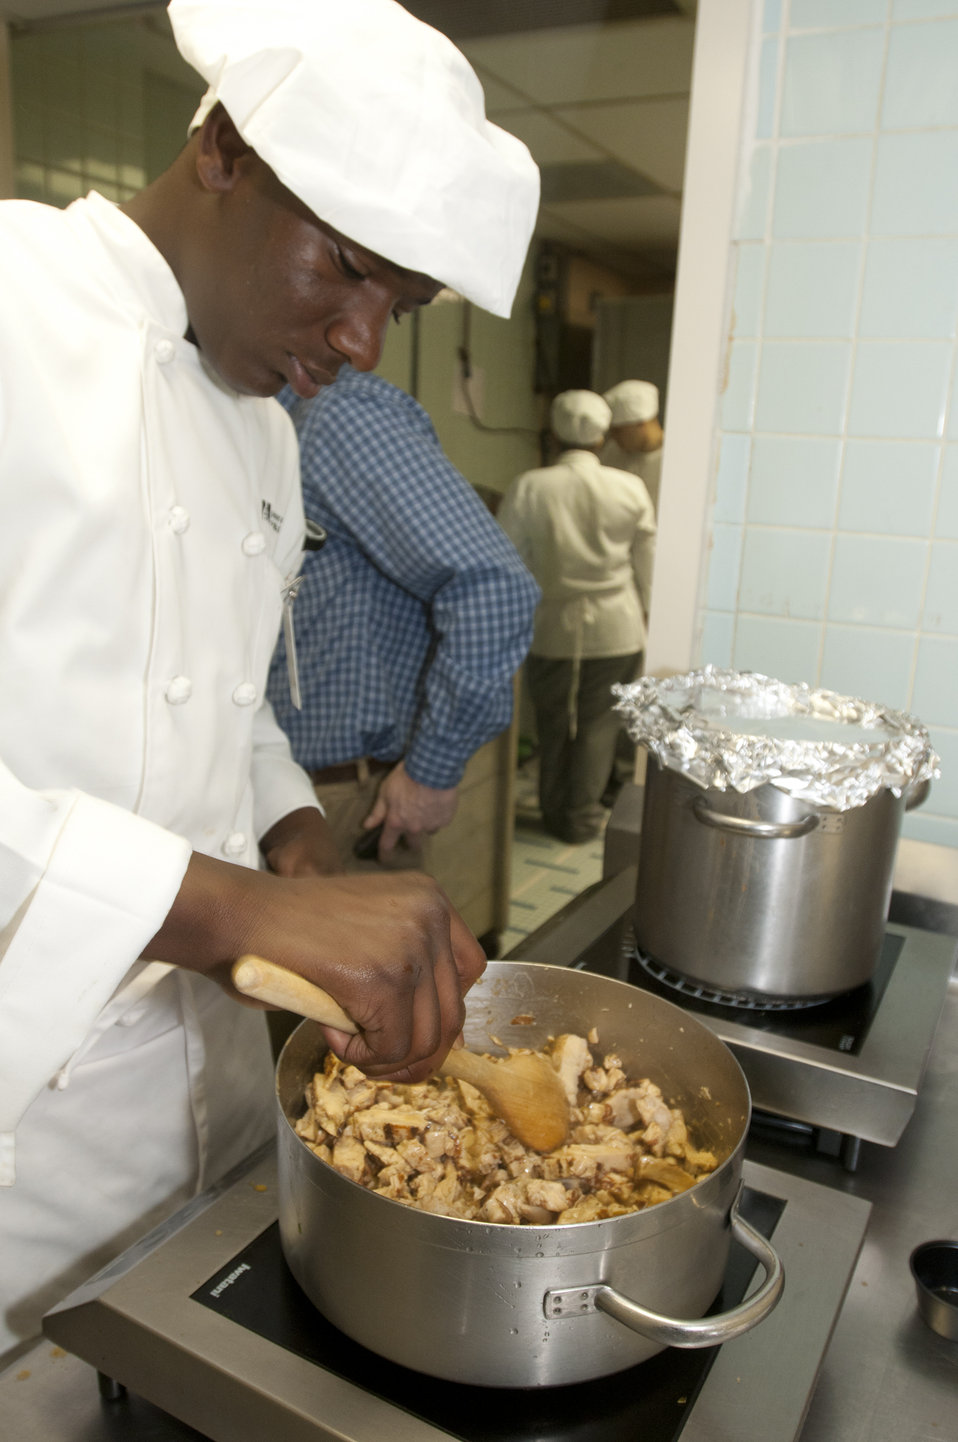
Washington, DC Public Schools student chef Dominique Mitchell incorporates seasoning with chicken breast meat during Cooking Up Change, National Healthy Cooking Competition at the USDA in Washington, DC, on Monday, May 23, 2011.